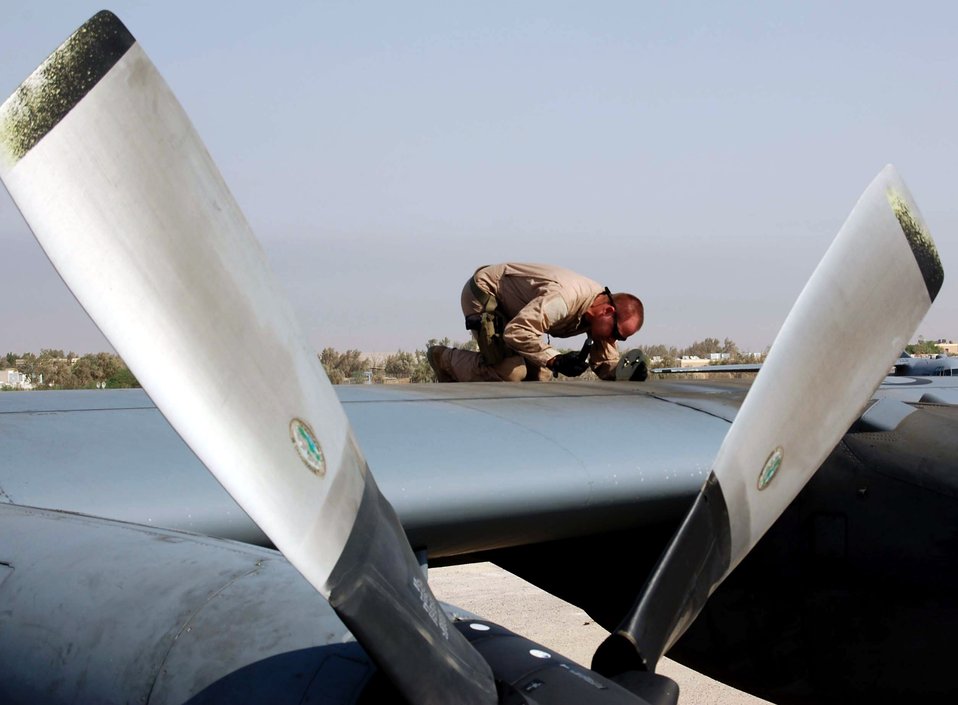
Moving the war: No pain, no gain

Tech. Sgt. Robert Kennedy inspects the left outboard motor bay of a C-130 Hercules prior to takeoff Oct. 11 on the 737th Expeditionary Airlift Squadron ramp. The check is part of the pre-flight inspection. Sergeant Kennedy is a 737th EAS flight engineer.